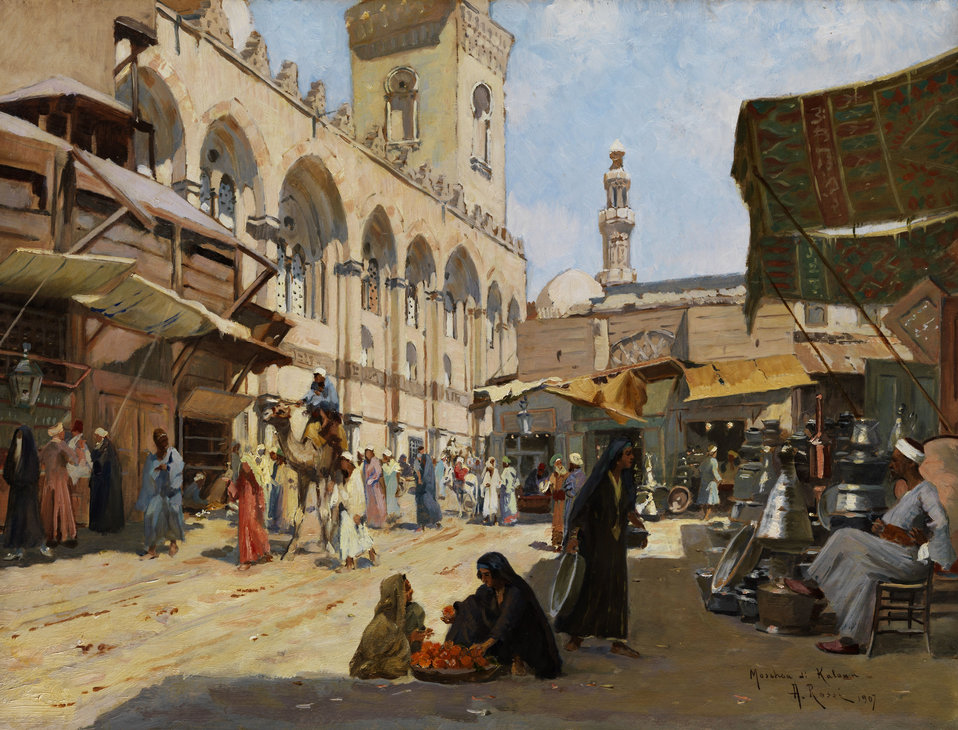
Alberto Rossi Arabischer Markt in Kaloun